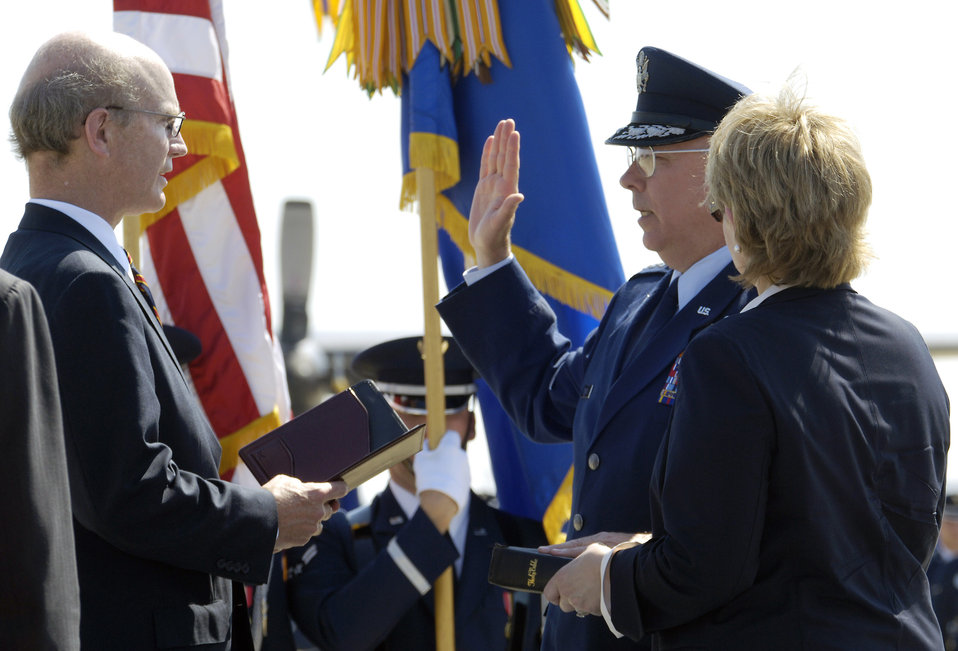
General Moseley swears in as Air Force's 18th chief of staff

ANDREWS AIR FORCE BASE, Md. -- Acting Secretary of the Air Force Pete Geren swears in Gen. T. Michael Moseley as the 18th Air Force Chief of Staff during a ceremony here Sept. 2. General Moseley served as Air Force vice chief of staff before being sworn in as the 18th Air Force chief of staff.